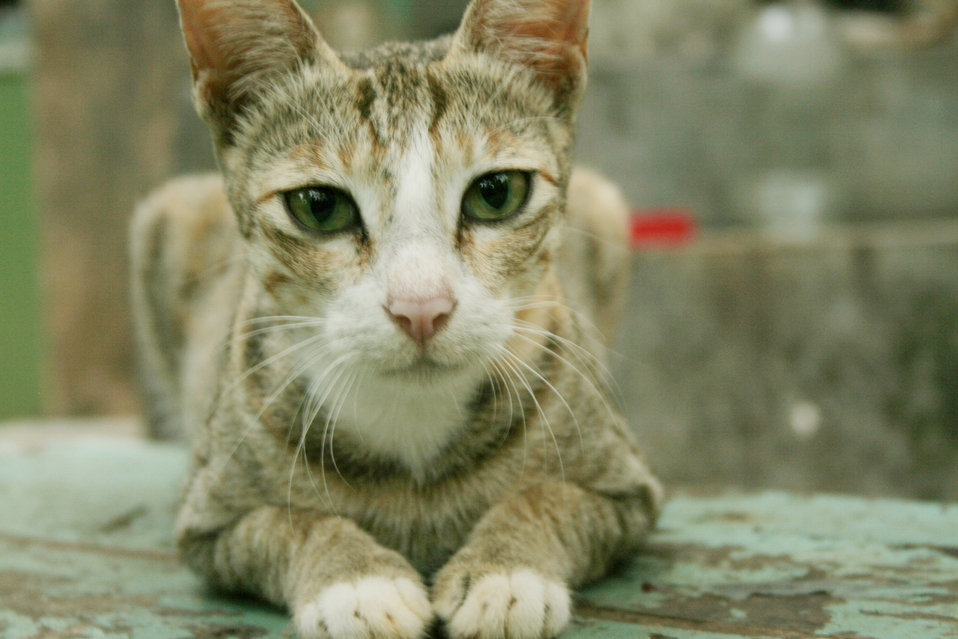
This work is dedicated to Public Domain